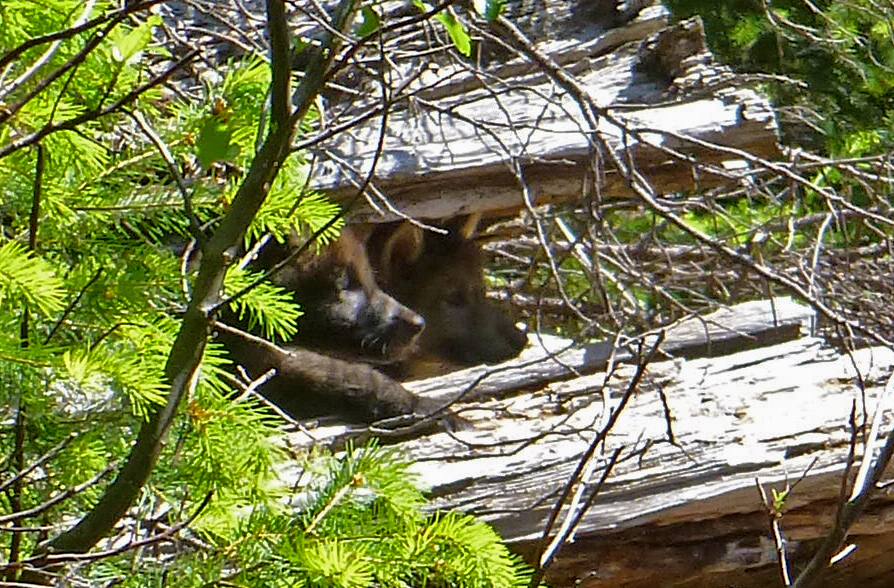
OR7 wolf pups

Wolf OR7 and a mate have produced offspring in southwest Oregon’s Cascade Mountains, wildlife biologists confirmed the week of June 2, 2014. In early May, biologists suspected that OR7, originally from northeast Oregon, had a mate in the Rogue River-Siskiyou National Forest when remote cameras captured several images of what appeared to be a black female wolf in the same area. U.S. Fish and Wildlife Service (Service) and Oregon Department of Fish and Wildlife (ODFW) biologists returned to the area Monday and observed two pups. It would be the first known wolves to breed in the Oregon Cascades since the mid-1940s.